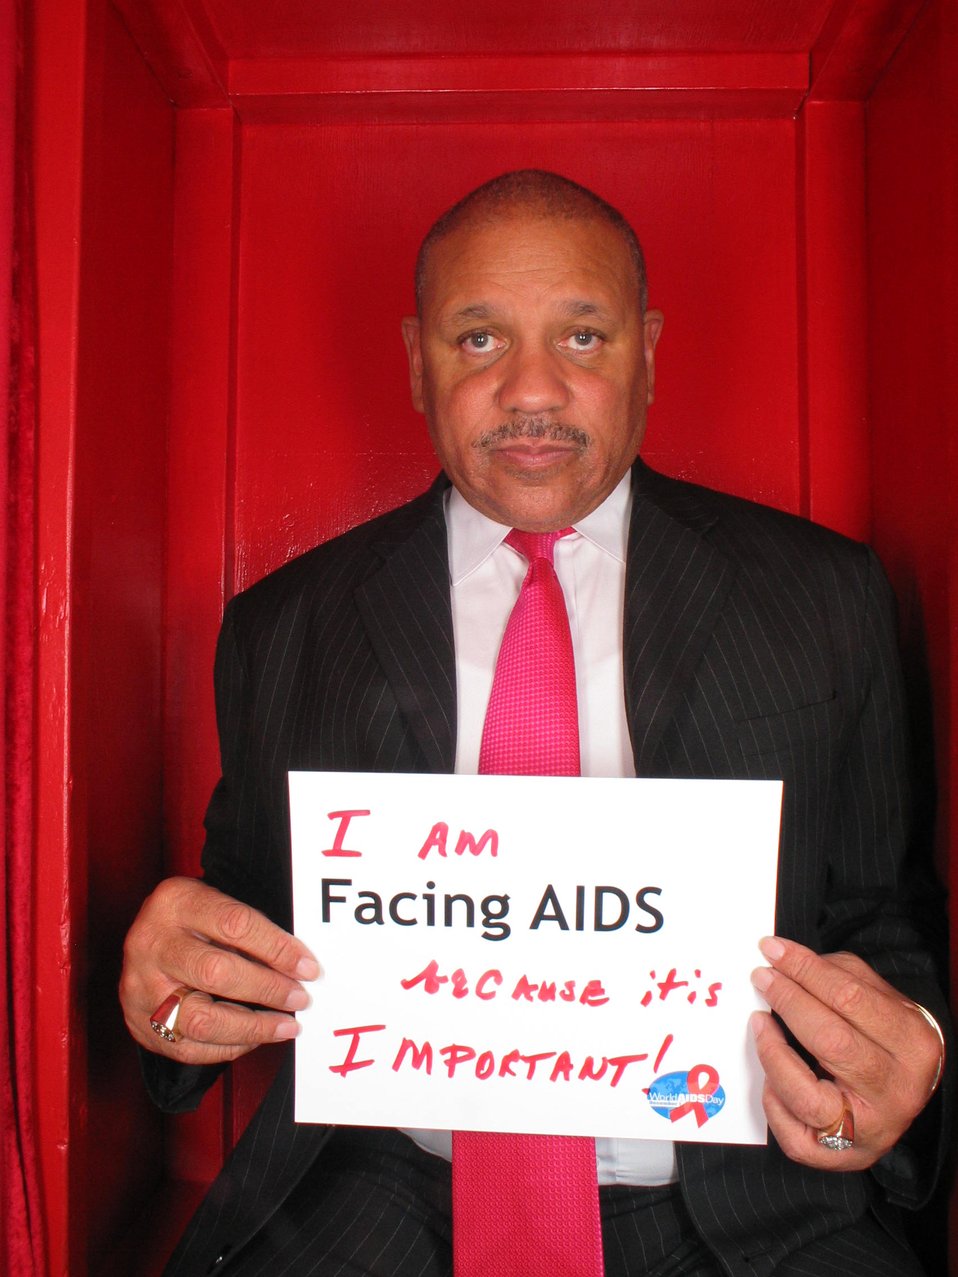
I am Facing AIDS because it is important!